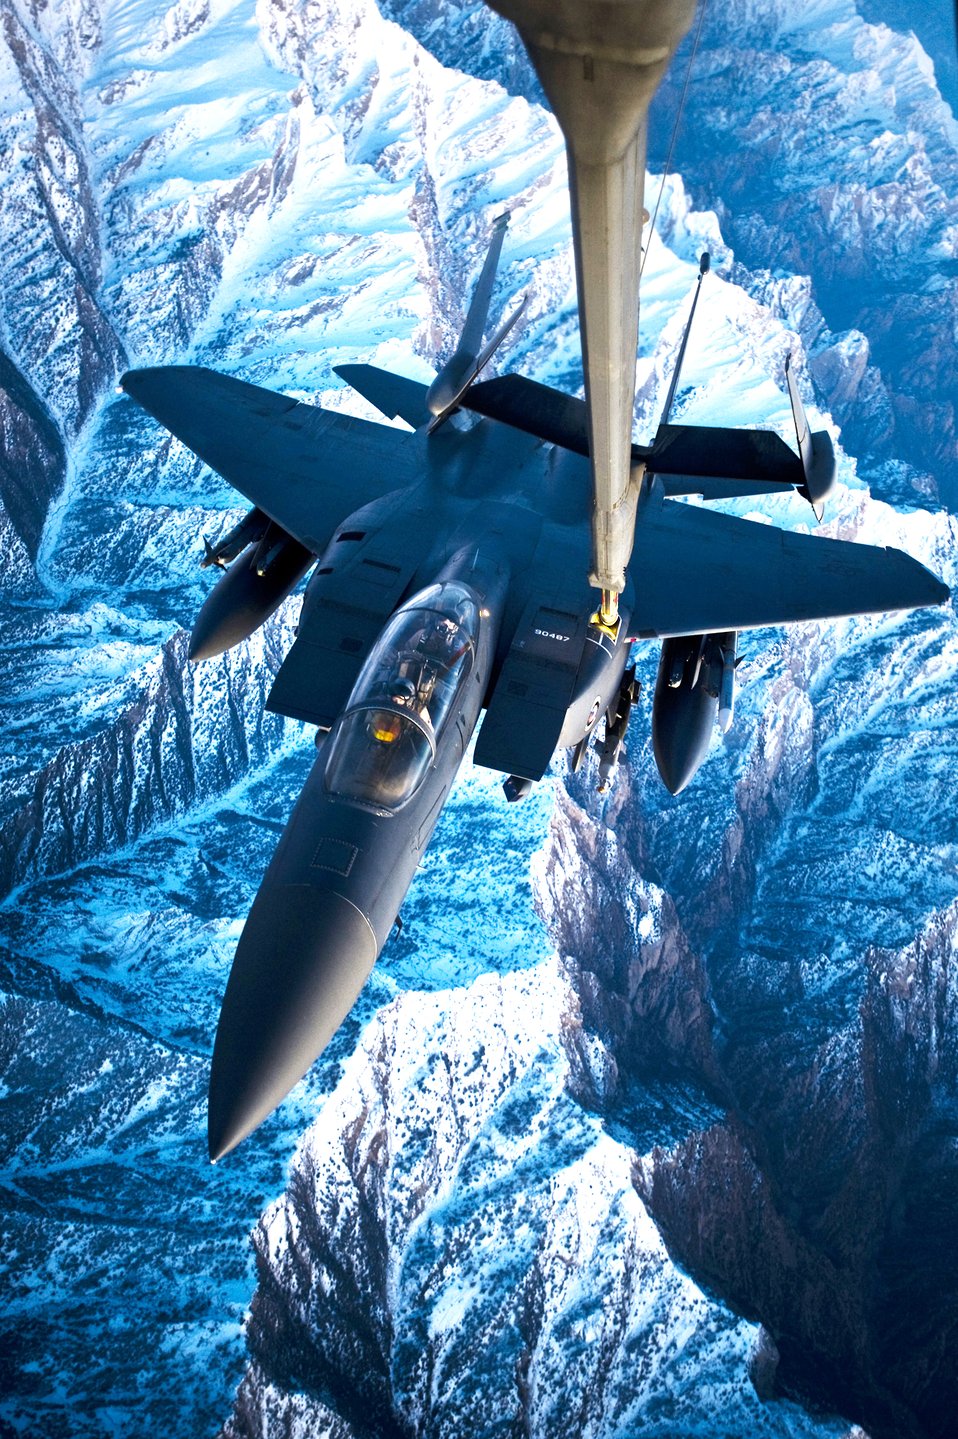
Ready to prowl

An F-15E Strike Eagle aircraft is refueled by a KC-10 Extender from the 908th Expeditionary Air Refueling Squadron over Afghanistan Dec. 6, 2009.